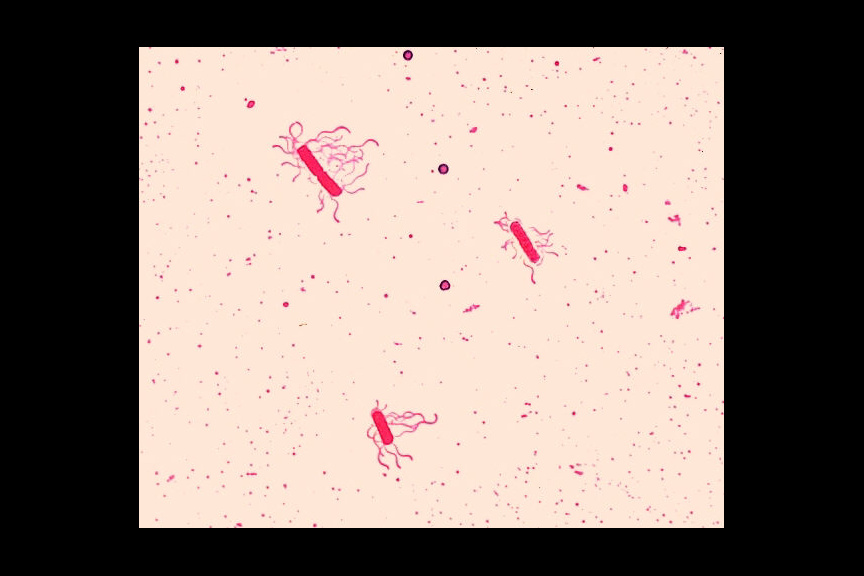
Bacillus cereus. Leifson flagella stain.